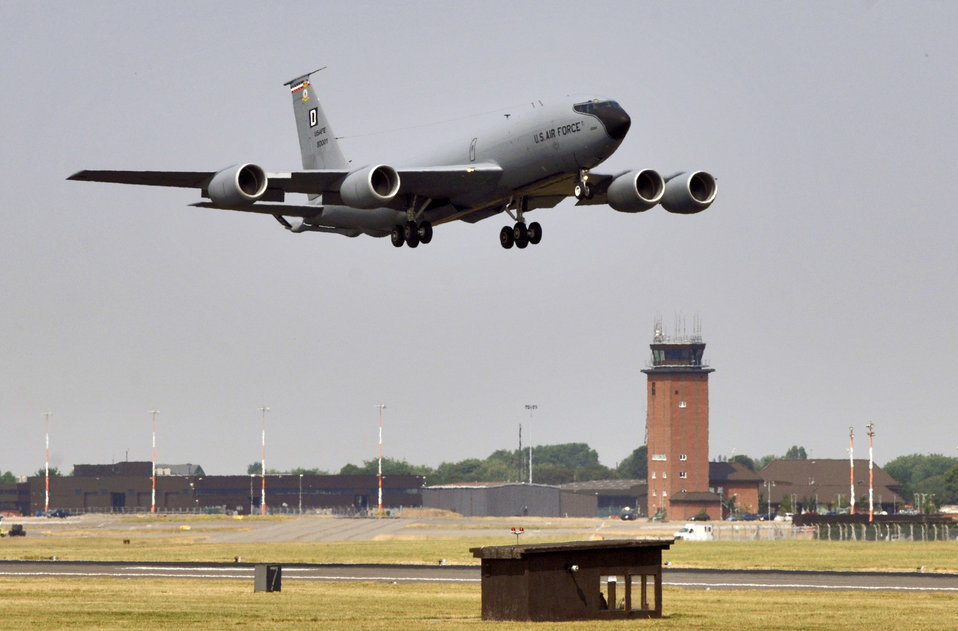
Long days, flexibility part of tanker crew's life

A KC-135 Stratotanker takes off for an aerial refueling mission over the North Sea from Royal Air Force Mildenhall, England, on July 25. The 351st Air Refueling Squadron flies the nearly 50-year-old tanker on some 50 missions each week.